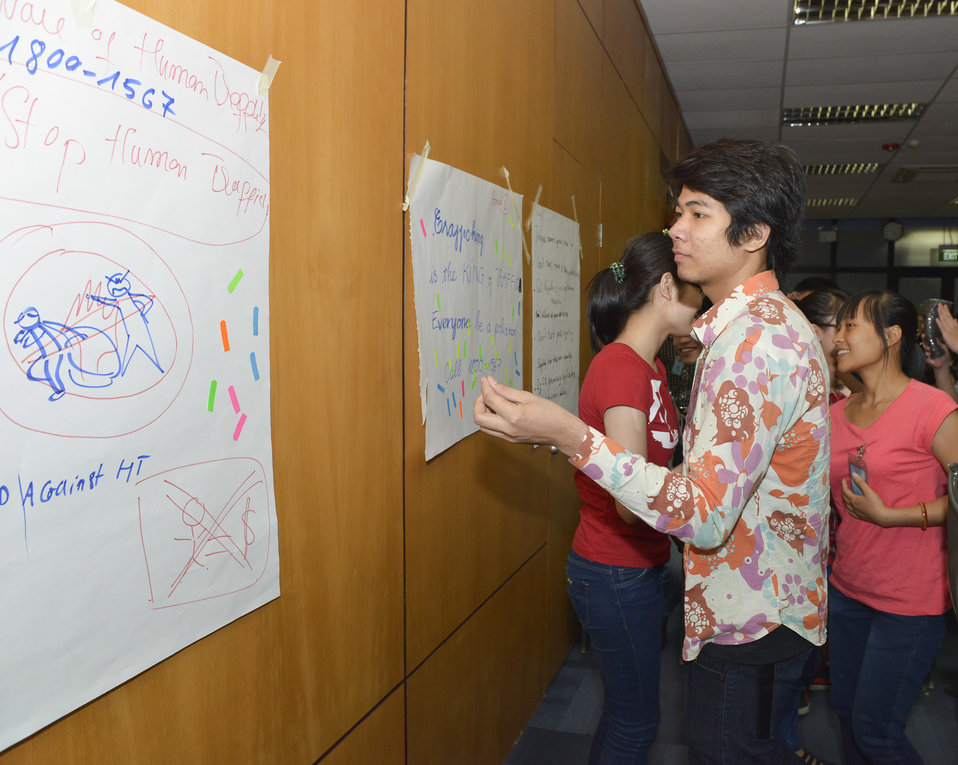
MTV Exit Talk to Engage Students in the Fight against Human Trafficking

Hanoi. June 5, 2014.